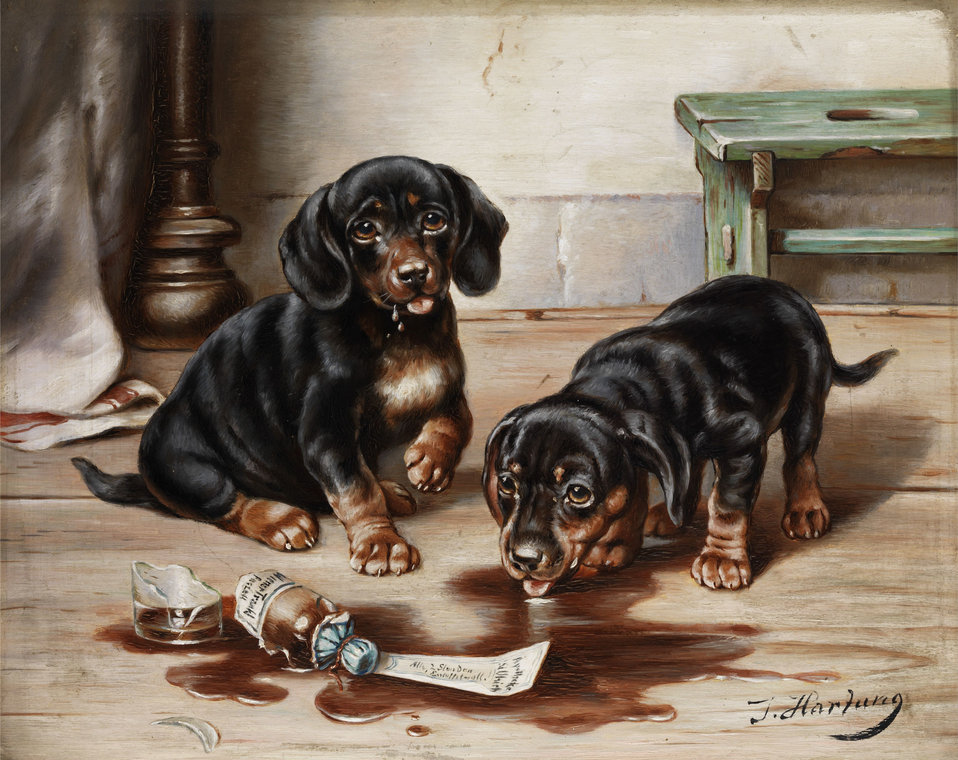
Zwei Dackel laben sich an einer Arznei aus zerbrochenem Apothekerglas; Öl auf Holz. 21 x 26,5 cm. Rechts unten signiert. Rezeptzettel mit Aufschrift 'Alle zwei Stunden ein Eßlöffel voll / Apotheke St. Ulrich'. An der Banderole Aufschrift 'Wiener Trankl'.